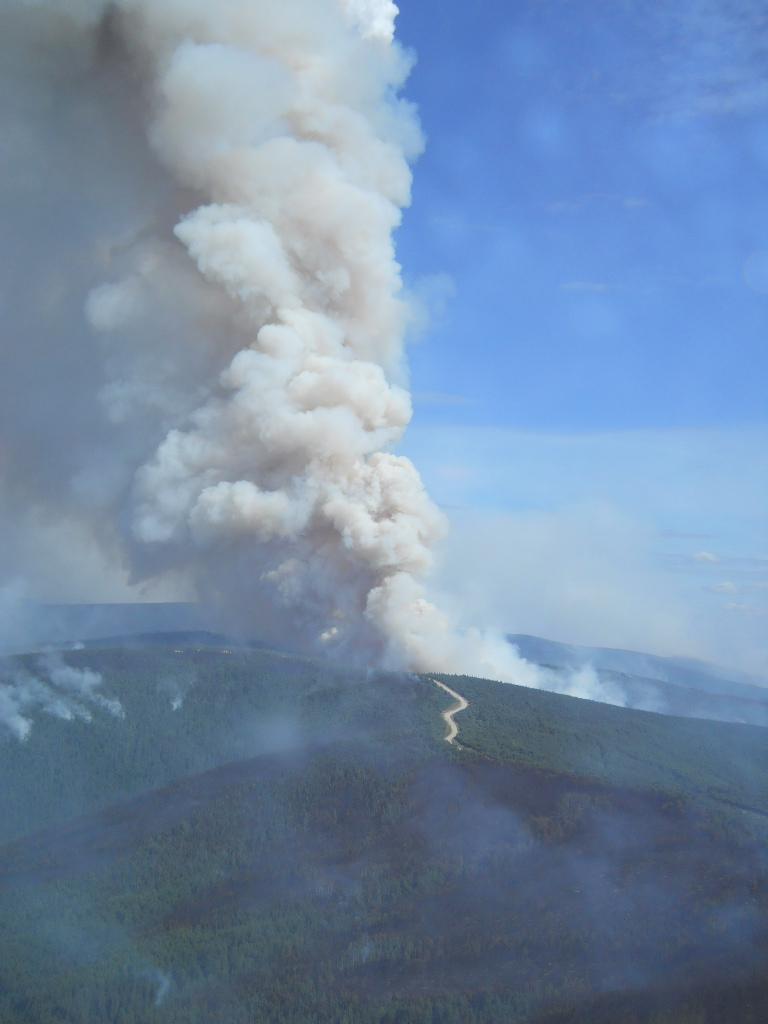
The Stewart Creek Fire located 25 miles east of North Pole, AK began on Jun. 19, 2013 due to human causes and has consumed an estimated 85, 475 acres. The fire is approximately 57% contained.